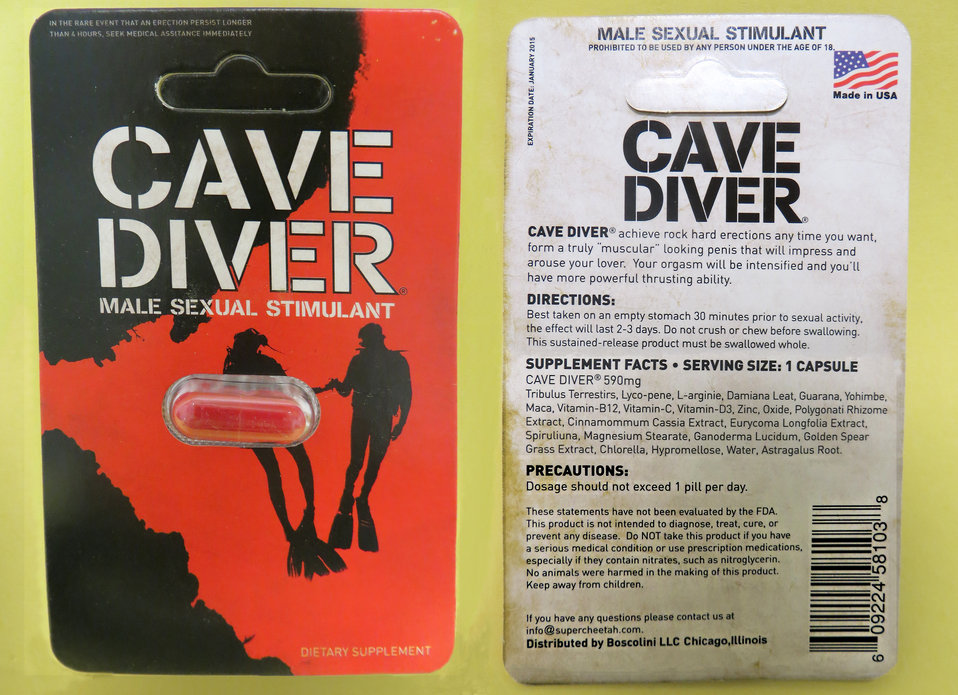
Cave Diver

June 10, 2013 - The FDA is advising consumers not to purchase or use 'Cave Diver,' a product promoted and sold for sexual enhancement. The product was found to contain undeclared sildenafil. For more information, go to www.fda.gov/Drugs/ResourcesForYou/Consumers/BuyingUsingMe....

And read this Consumer Update: Beware of Fraudulent ‘Dietary Supplements’